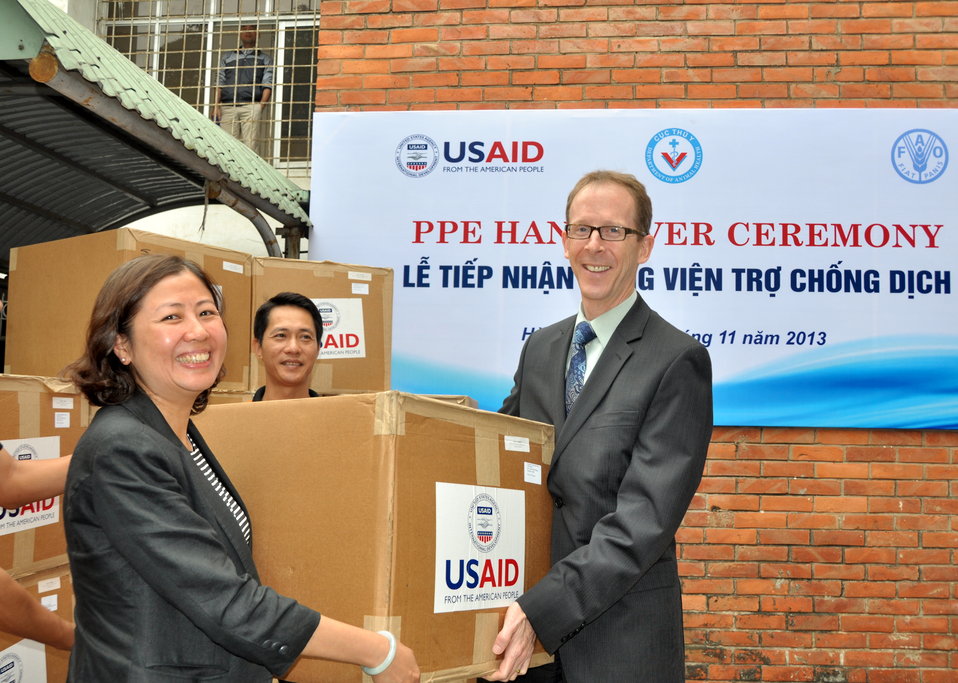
Dr. Nguyen Thu Thuy (left), Deputy Director General, Department of Animal Health under Vietnam's Ministry of Agriculture and Rural Development, receives a box of the personal protective equipment from USAID Mision Director Joakim Parker (right).

Hanoi, November 20, 2013.